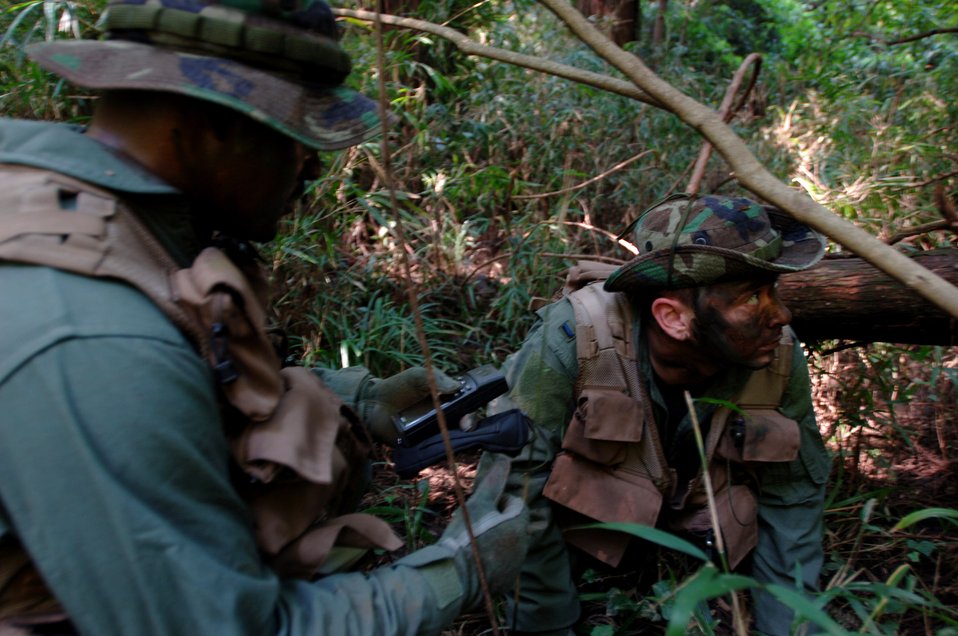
Playing with the enemy

YOKOTA AIR BASE, Japan -- Tech. Sgt. C.J. McClain (left) and 1st Lt. Andrew Salcido evade enemy forces after their aircraft was